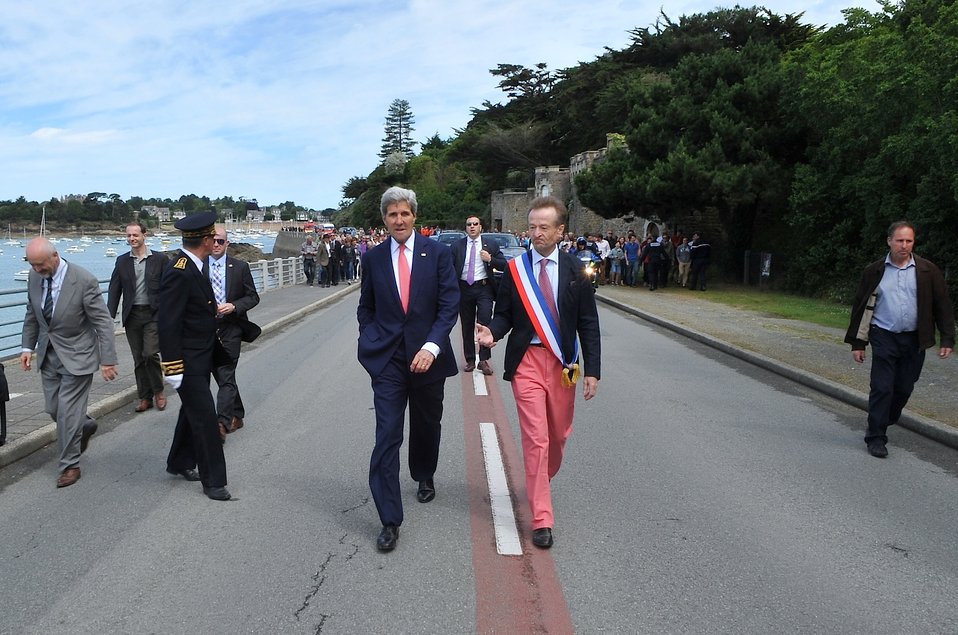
Secretary Kerry, Mayor Denby-Wilkes Lead Residents on Walk Through Brittany Town

U.S. Secretary of State John Kerry and Mayor Vincent Denby-Wilkes of Saint Briac, France, lead residents of the Brittany community on a walk from a memorial recalling three Americans who died liberating it from Nazi occupiers to the town square for a ceremony commemorating the 70th anniversary of D-Day, on June 7, 2014.